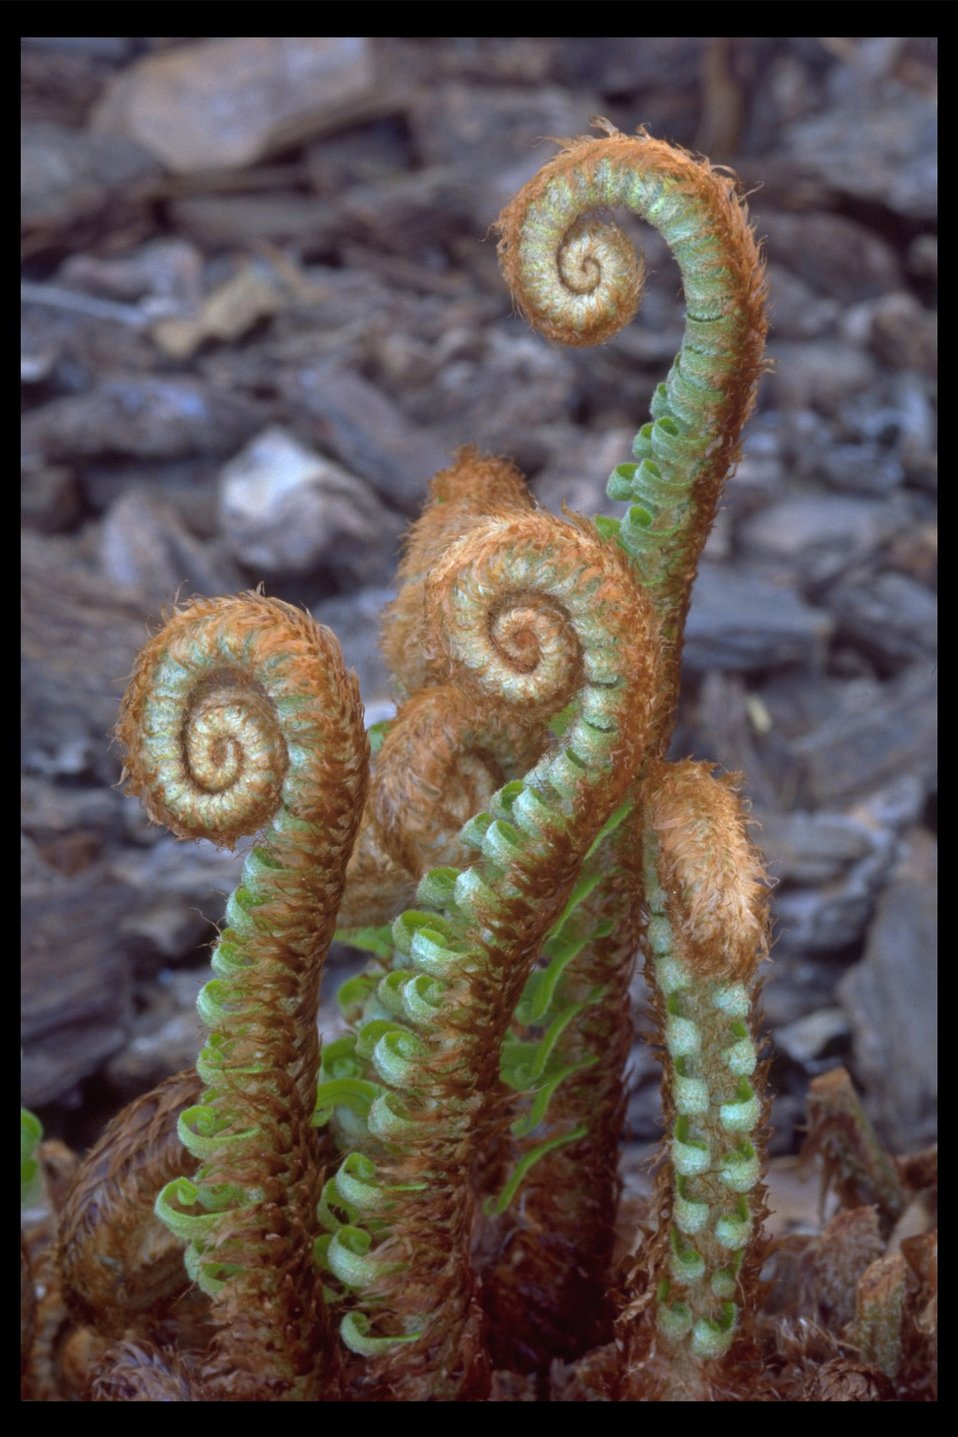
Fern Fiddleheads (Polystichum sp.) Photograph taken in the photographer's backyard. "With ferns like these, who needs anemones?